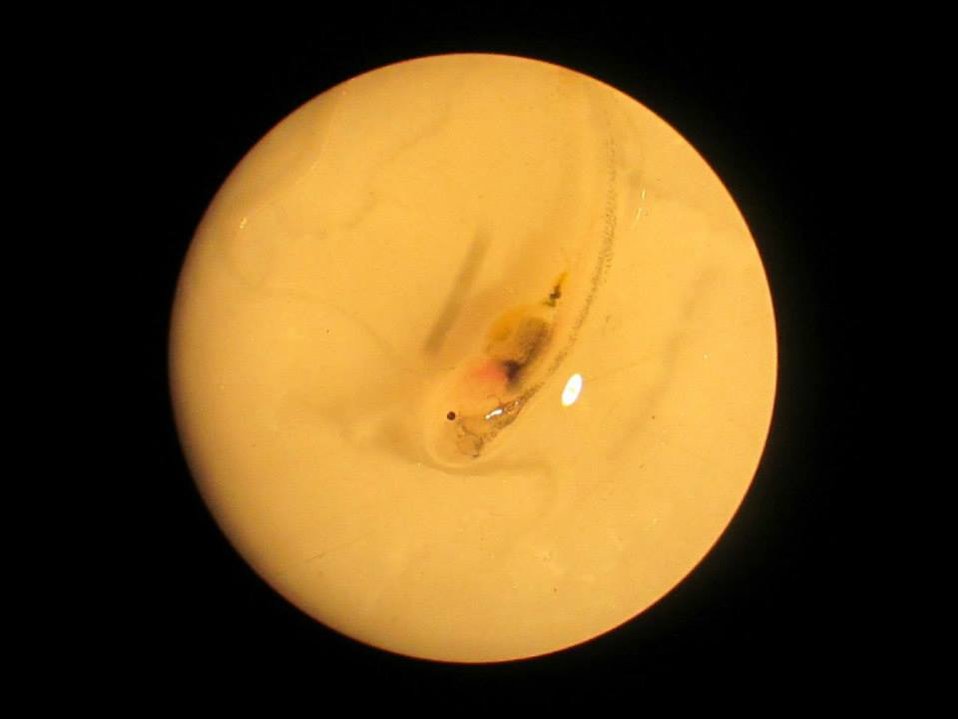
Paddlefish Fry

Paddlefish at 2 weeks old